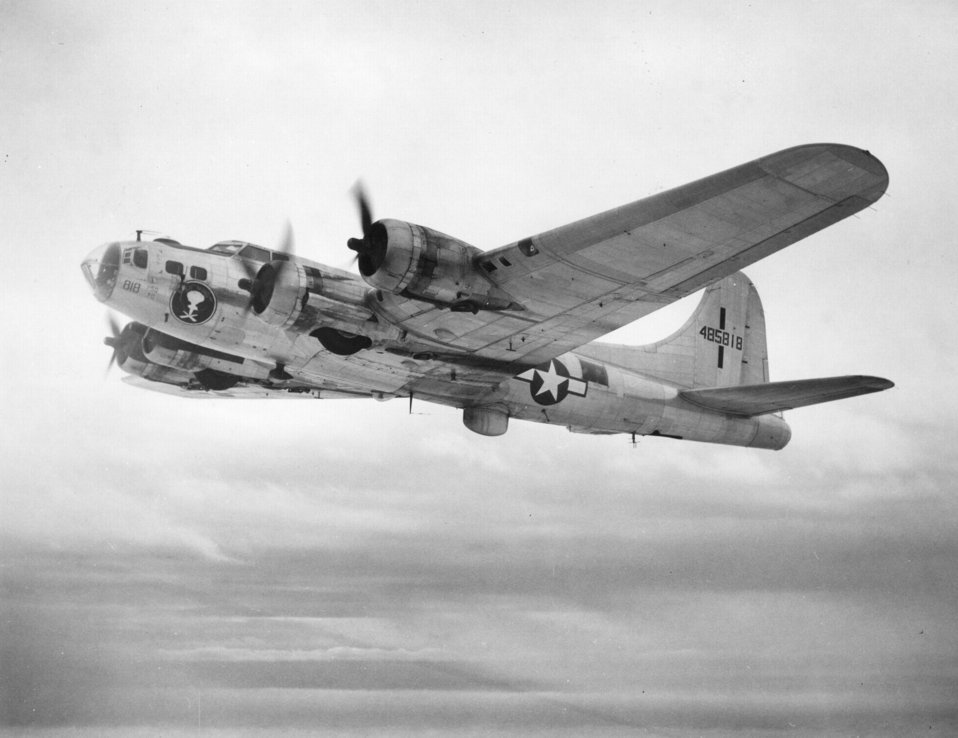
B-17

The B-17 Flying Fortress served in every World War II combat zone, but is best known for daylight strategic bombing of German industrial targets.